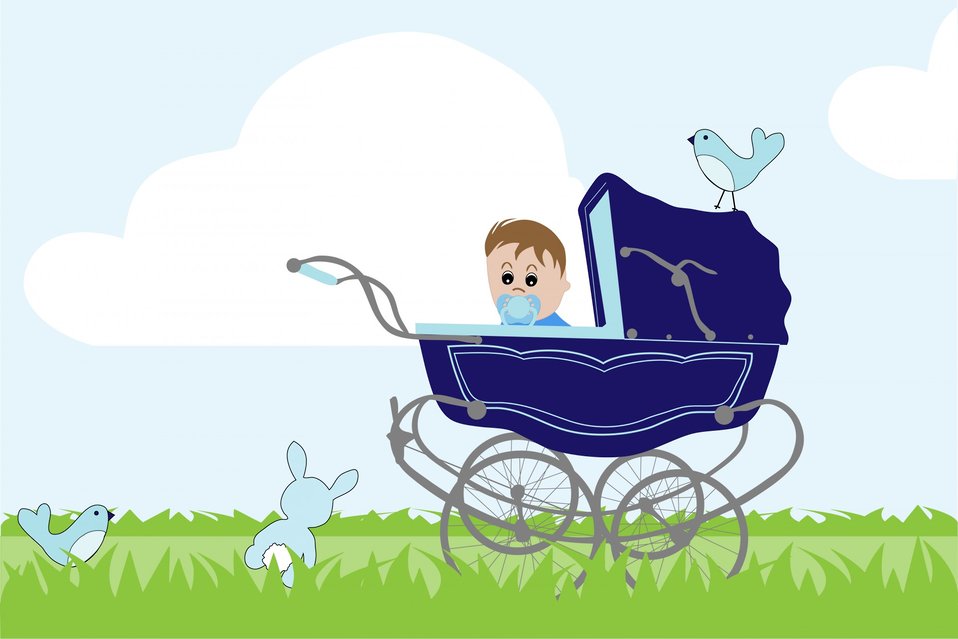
Baby boy vintage stroller

Cute baby boy in blue vintage baby carriage for card making.